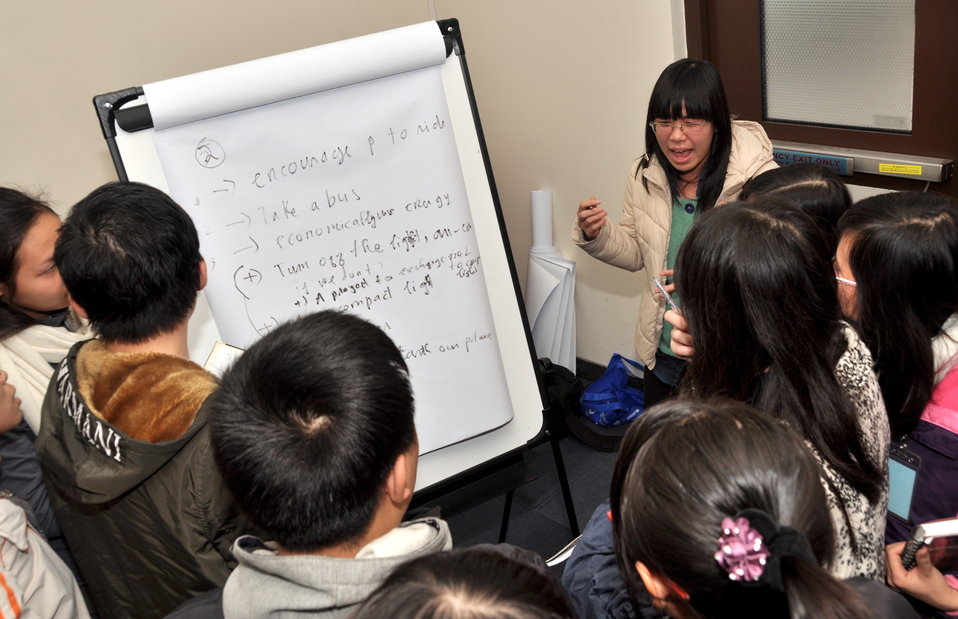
Speaker program on Climate Change and Clean Energy at the American Center

Hanoi, January 16, 2013